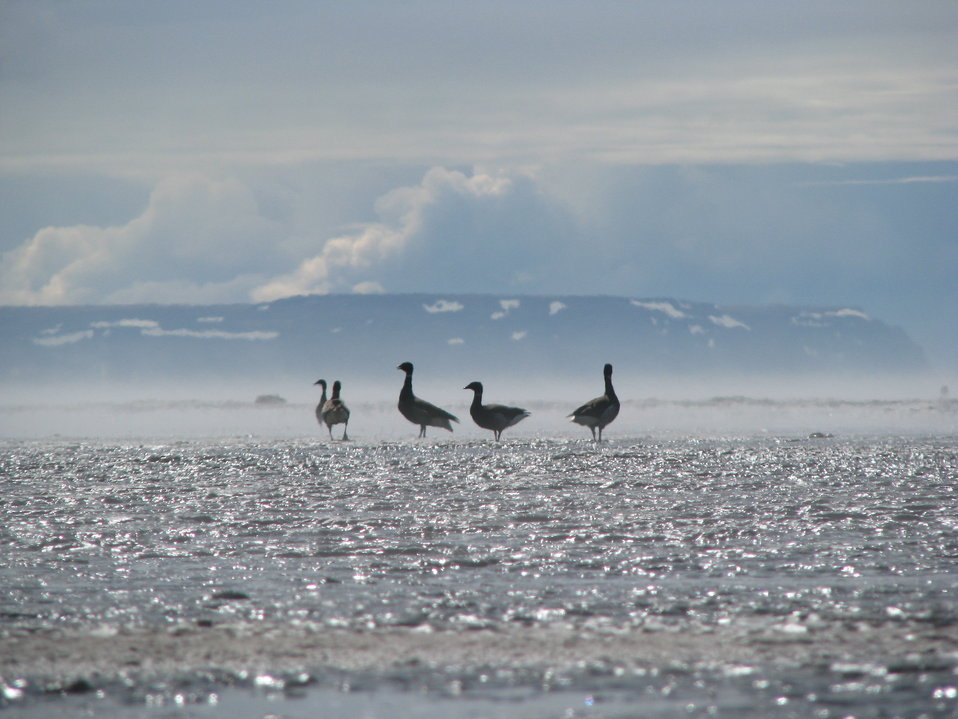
Brant hanging out on a mudflat

Yukon Delta NWR
As the mudflats warm up steam is given off creating a foggy, magestic scene. Ideal for photos.